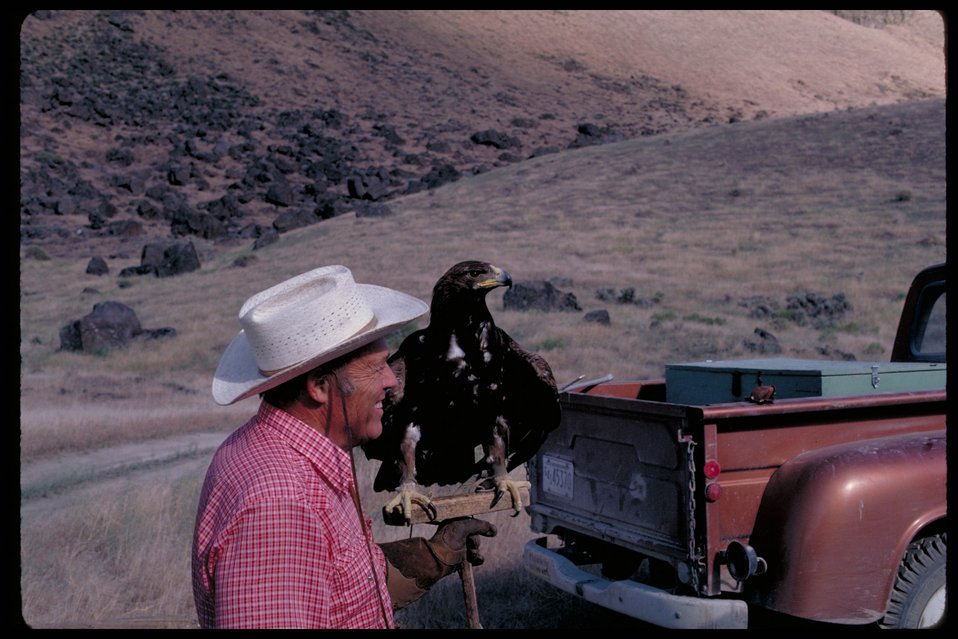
Man with eagle Birds of Prey National Conservation Area BOP Owyhee Field Office LSRD Lower Snake River District